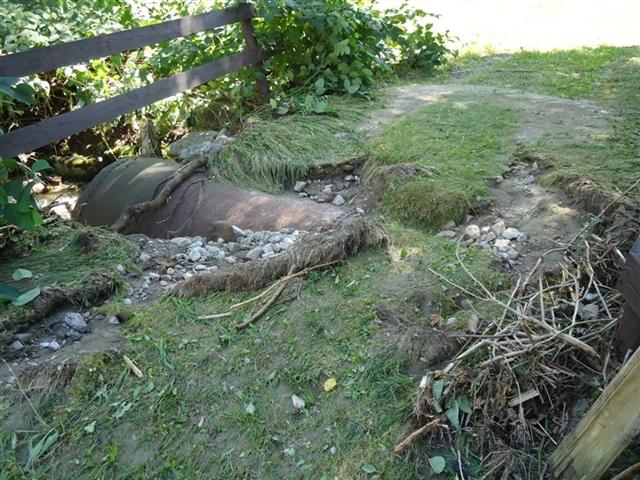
Storm damage at Eisenhower National Fish Hatchery in Vermont

Culvert and secondary road damage.